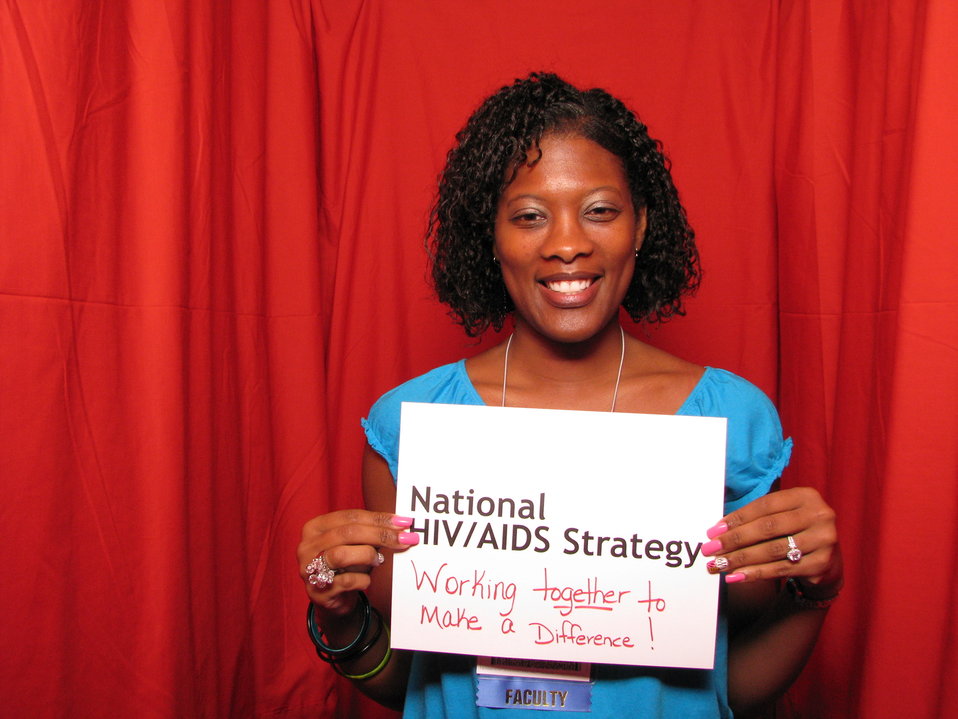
National HIV/AIDS Strategy, Working TOGETHER to Make a Difference!

From the AIDS.gov photo booth at the U.S. Conference on AIDS, September 2010 (Orlando, FL).